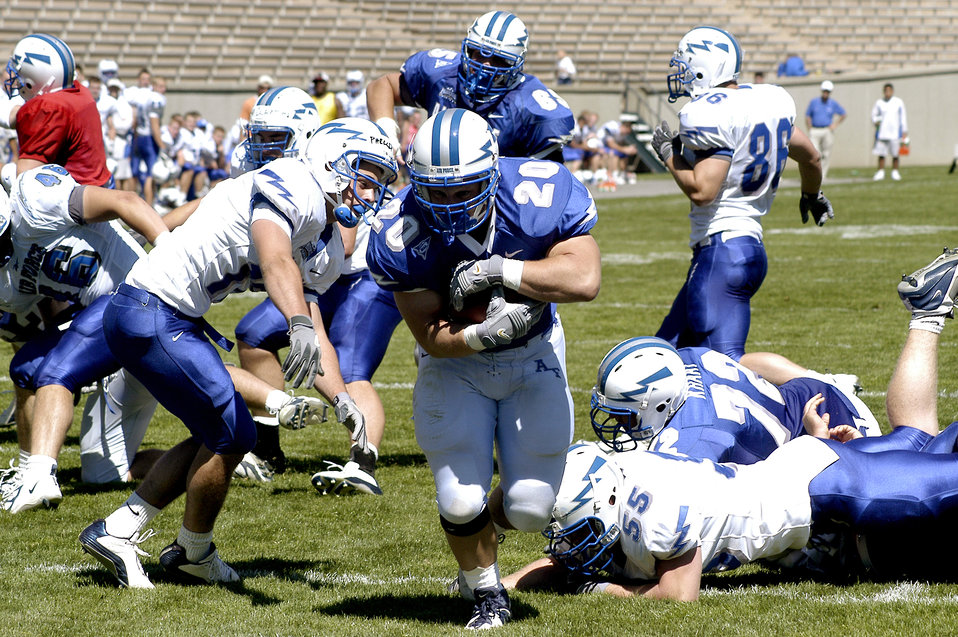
Gridiron gear up

U.S. AIR FORCE ACADEMY, Colo. -- Falcon senior fullback Dan Shaffer plows ahead for a touchdown during the Air Force Academy's final Blue-Silver scrimmage of the season Aug. 28. Shaffer carried the ball 67 times last season for 296 yards, and looks to add to those numbers in the Sept. 4 season opener against No. 13 California.